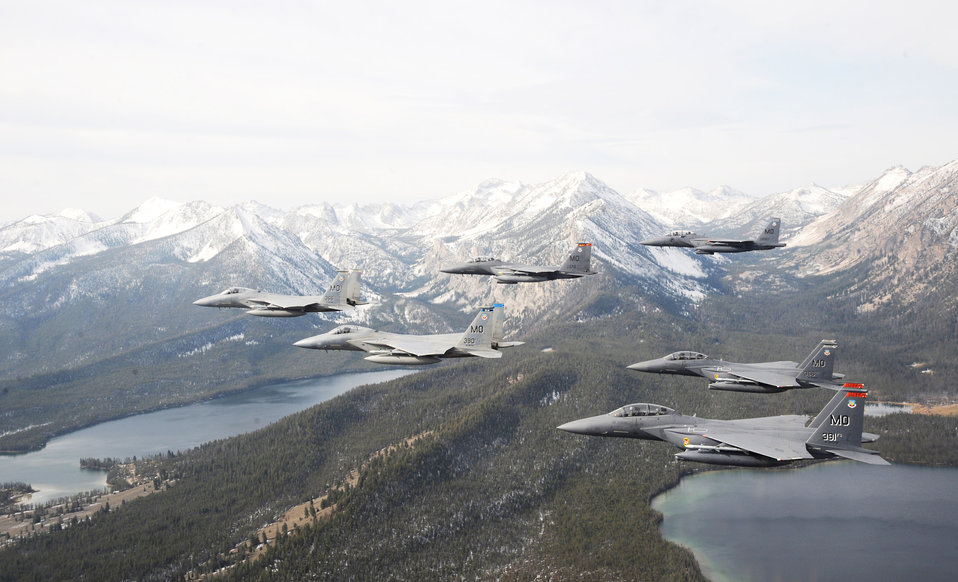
Flying over the Sawtooth Mountains

A six-ship formation of F-15C Eagle and F-15E Strike Eagles fly over the Sawtooth Mountains in Idaho Oct. 13, 2009. The aircraft are assigned to the 366th Fighter Wing at Mountain Home Air Force Base, Idaho.